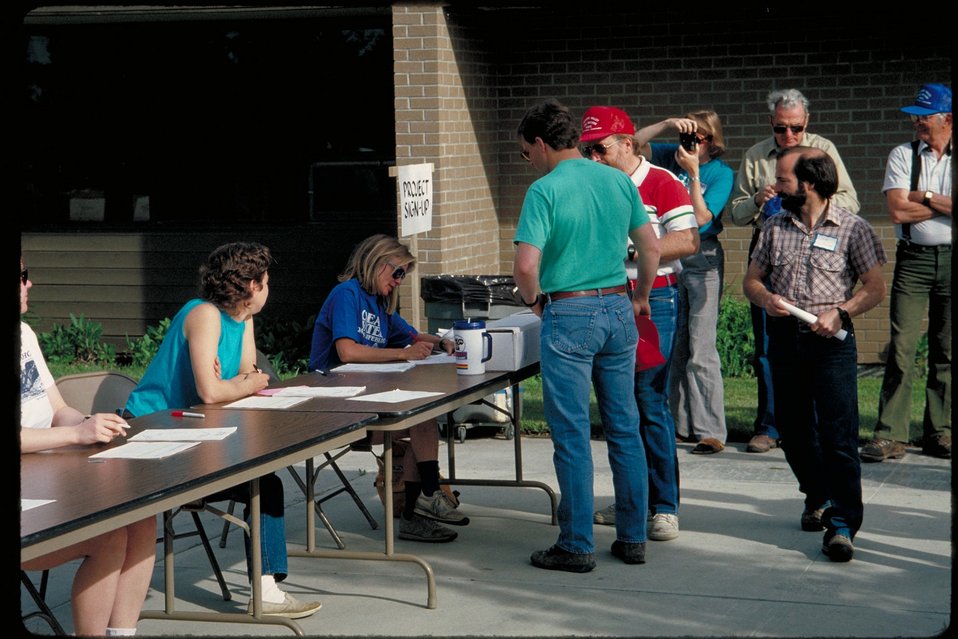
Boise Front project sign-up Four Rivers Field Office LSRD Lower Snake River District